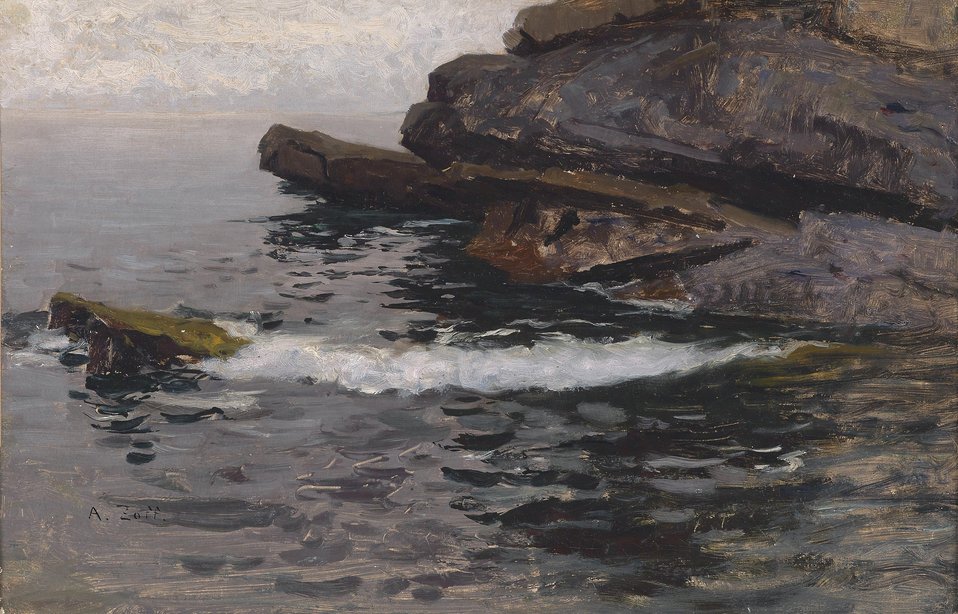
Deutsch: Felsküste bei Capo Lungo (Nervi), signiert A. Zoff, rückseitig bezeichnet 'Küste Capo Lungo, Nervi 1880', Öl auf Papier auf Leinwand, 28 x 43,5 cm